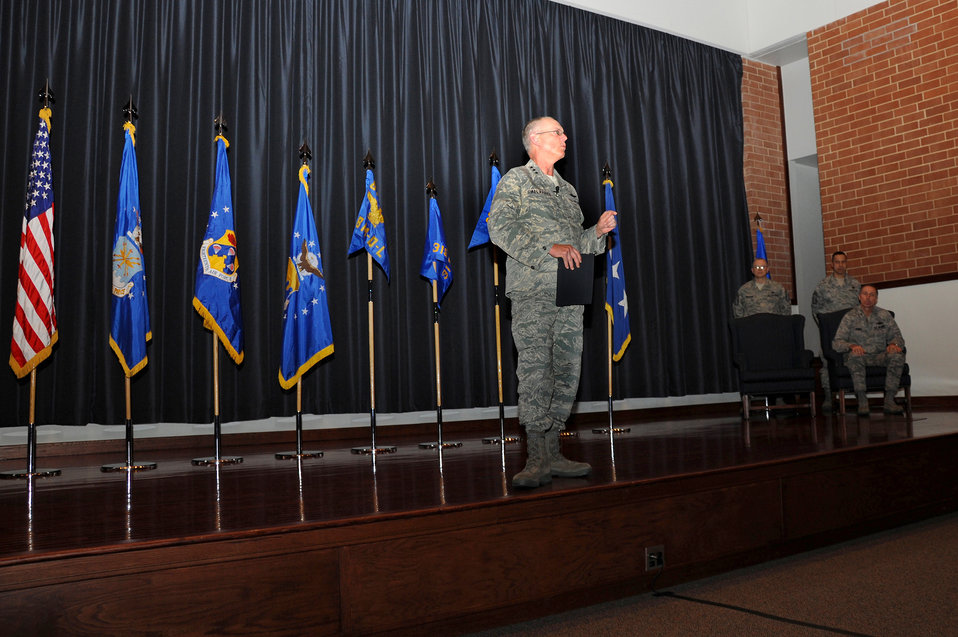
Expeditionary center formally assumes command of five Air Mobility Command units

Lt. Gen. Robert Allardice addresses the crowd prior to the transer of command of five Air Mobility Command units to the U.S. Air Force Expeditionary Center during a re-alignment ceremony Jan. 6, 2011, at Joint Base McGuire-Dix-Lakehurst, N.J. The expeditionary center assumed command of five former 18th Air Force units as part of re-structuring within Air Mobility Command. General Allardice is the 18th Air Force commander.